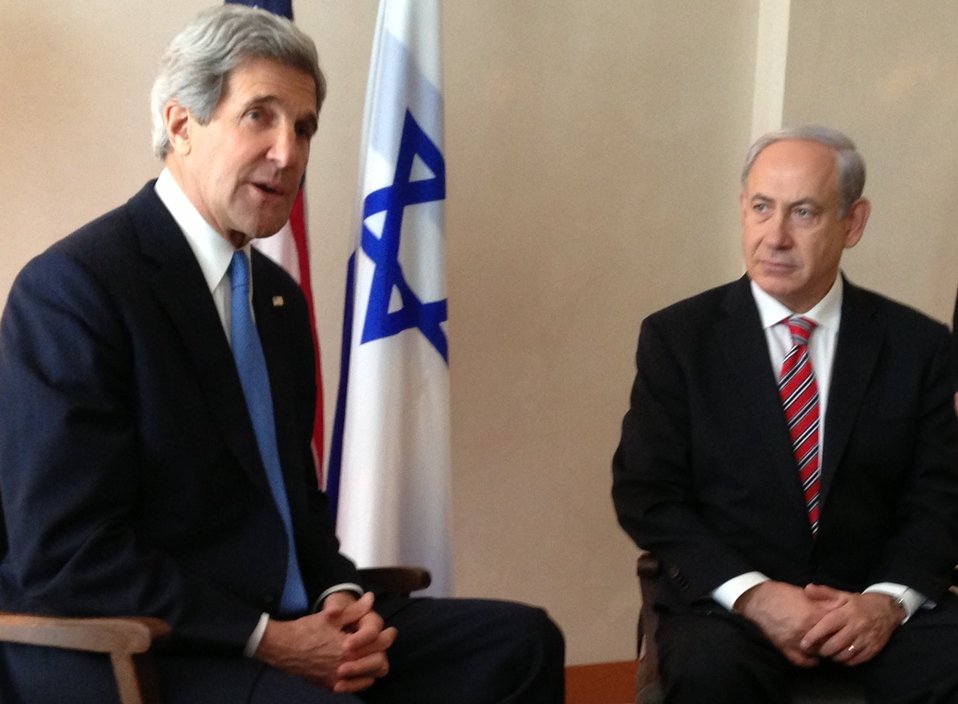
Secretary Kerry Speaks Before Meeting with Israeli Prime Minister Benjamin Netanyahu

U.S. Secretary of State John Kerry speaks before his meeting with Israeli Prime Minister Benjamin Netanyahu in Jerusalem, April 9, 2013.